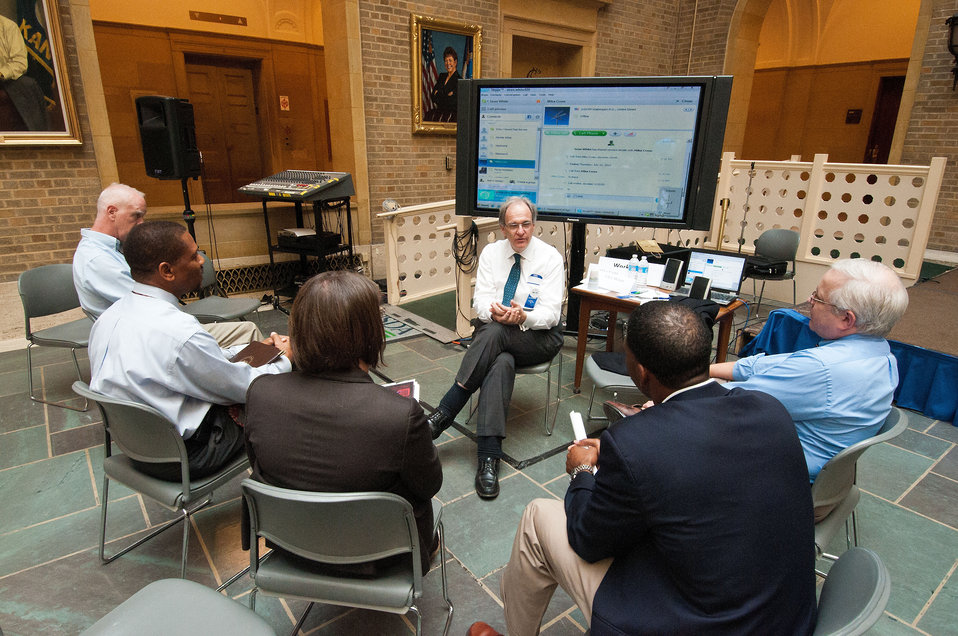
U.S. Department of Agriculture (USDA) Rural Development (RD) Rural Utilities Service (RUS) agent Christopher McLean discusses Work/Life Balance during Flash Mentoring Sessions to employees during one of the many forums held for the Rural Development Cultural Transformation Day event held in Washington, D.C. on Thursday, July 12, 2012.